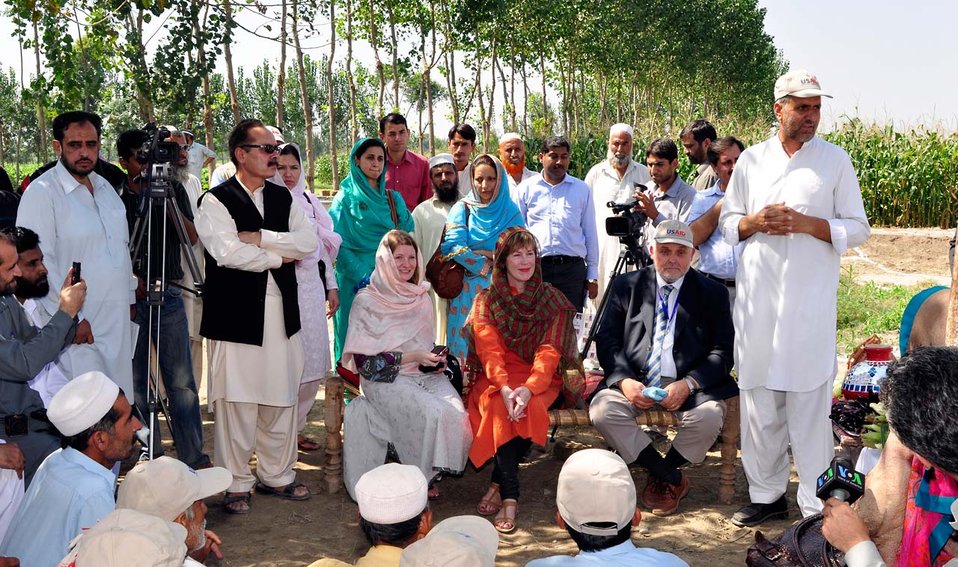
Dr. Marilyn Wyatt's Visit to the Flood-affected Farming Communities in Khyber Pakhtunkhwa